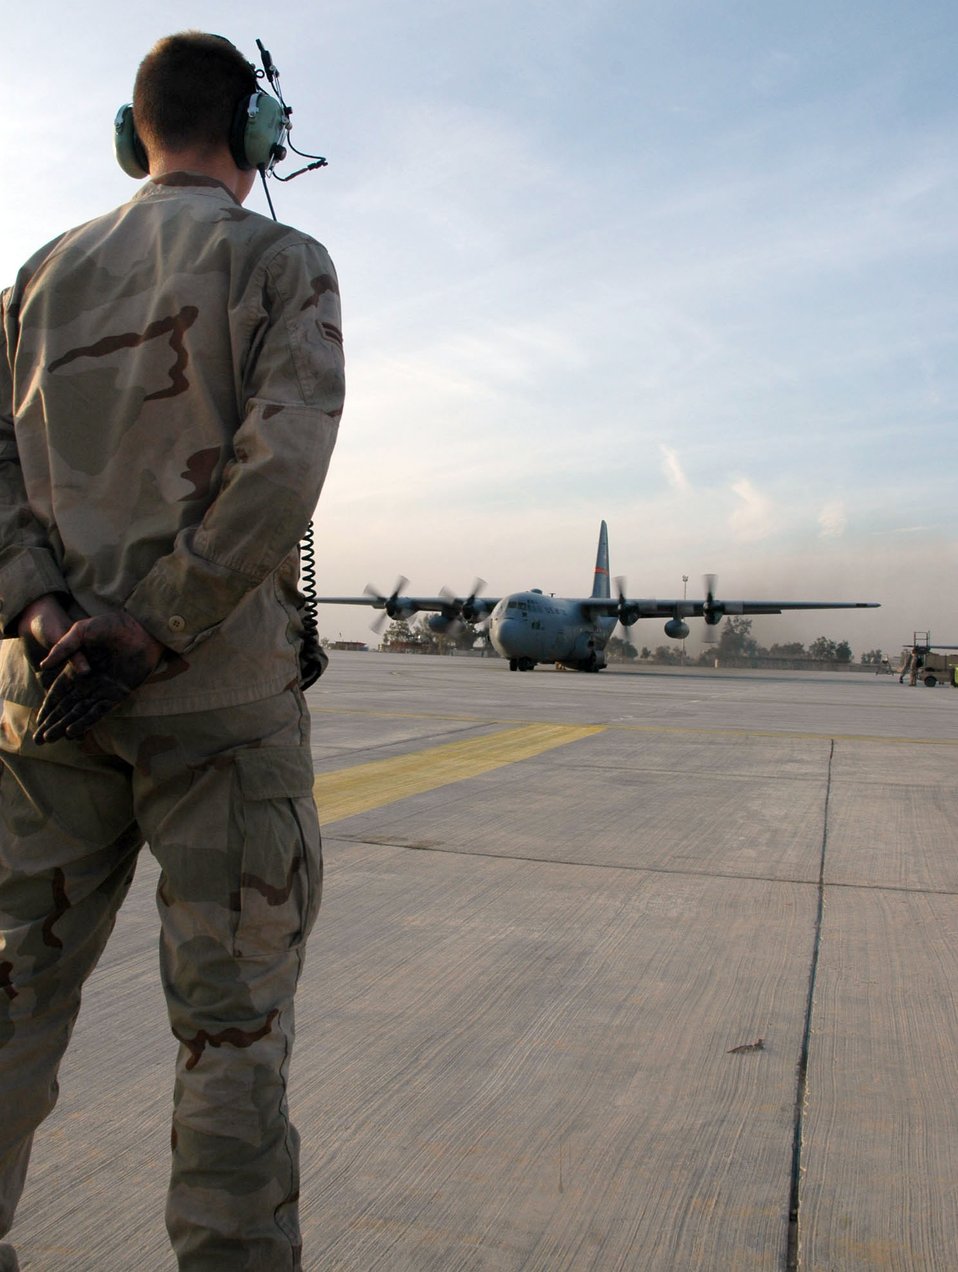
Little Rock Airlift

BALAD AIR BASE, Iraq (AFPN) -- Airman 1st Class James Money prepares to marshal a C-130 Hercules. He is deployed from the 463rd Aircraft Maintenance Squadron at Little Rock Air Force Base, Ark.